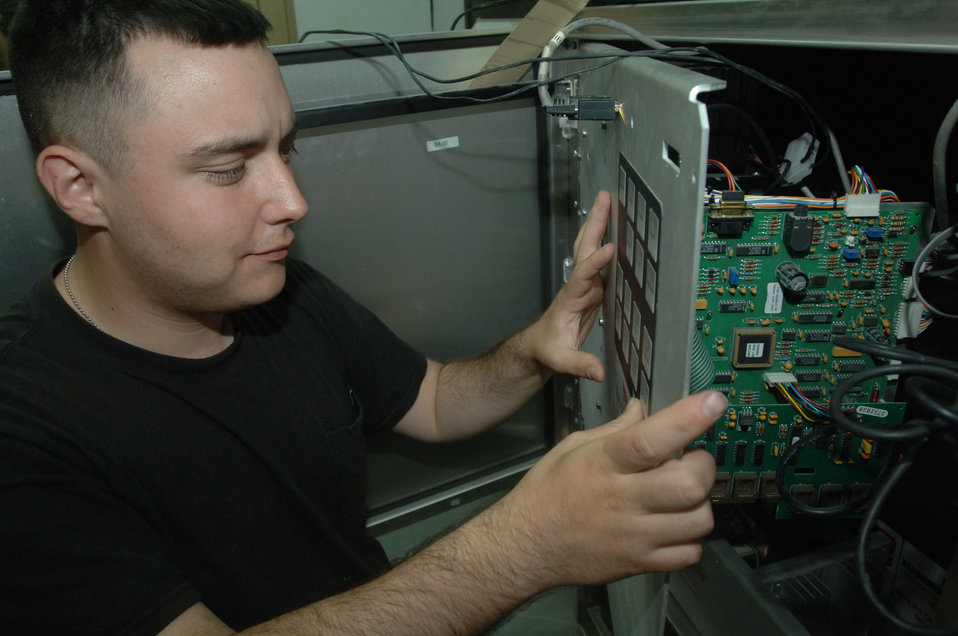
Operation Iraqi Freedom

ALI AIR BASE, Iraq -- Senior Airman Leonard Reynolds reconnects and tests the transmitter receiver module on the base